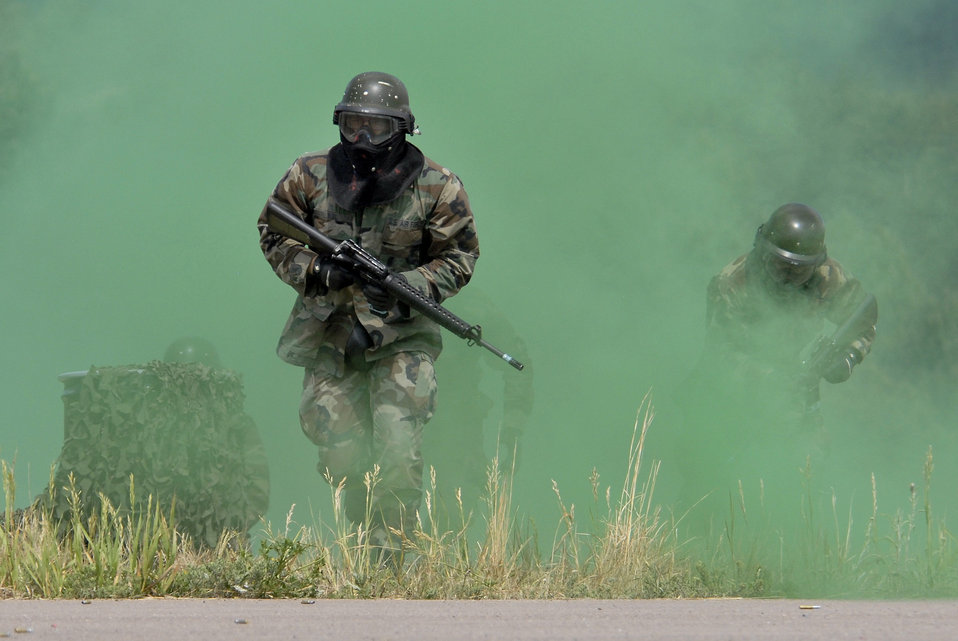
Global Engagement readies Academy cadets for future

U.S. Air Force Academy cadets storm through a smoke grenade as they attempt to secure the Military Operations Urban Terrain village during the 71-day summer training schedule June 19 at the Academy in Colorado. Approximately 1,200 Academy cadets are going through intensive training this summer to be ready to be globally engaged when they graduate.